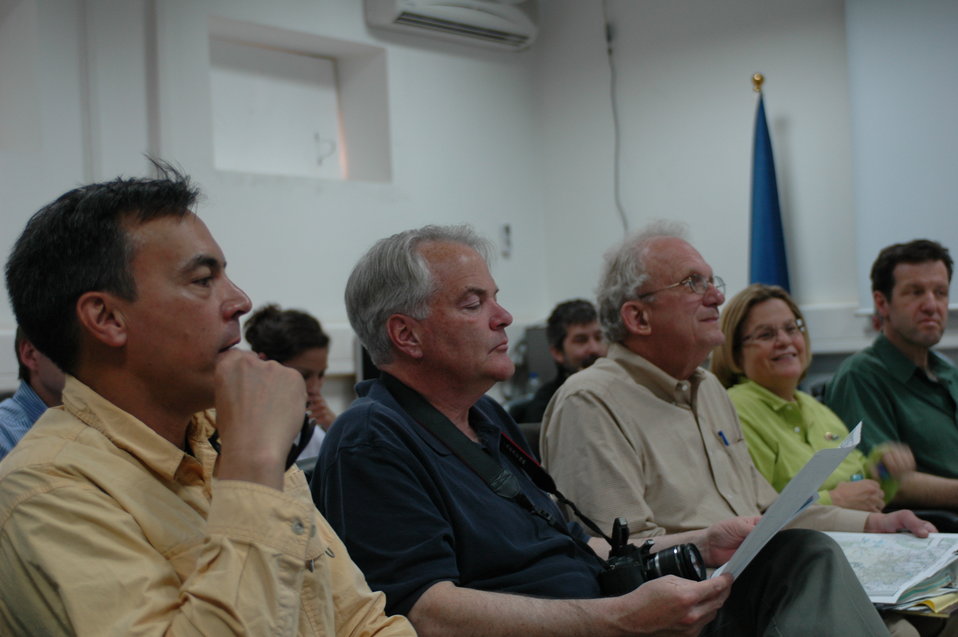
CODEL Berman